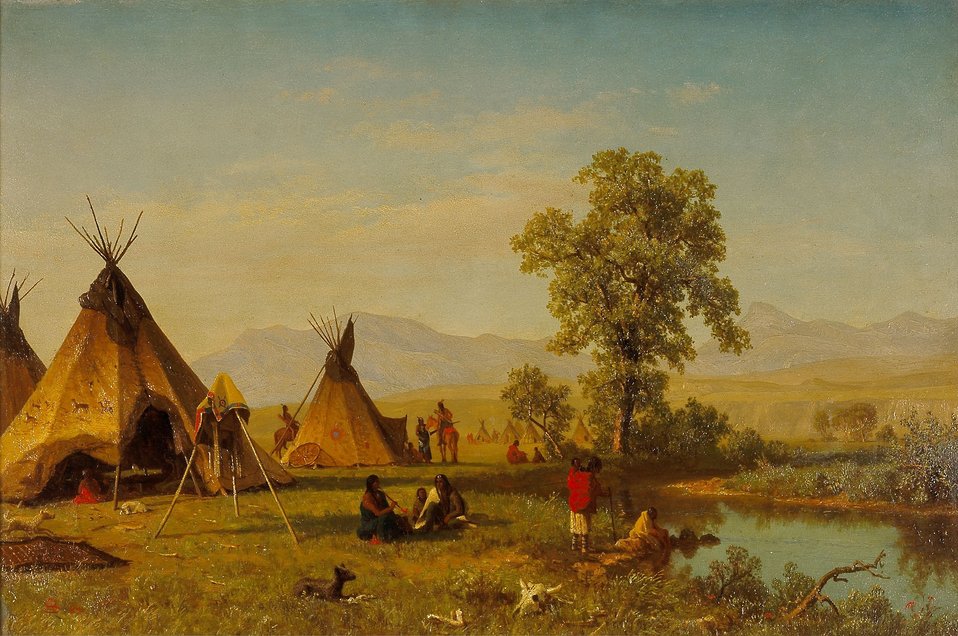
Albert Bierstadt - Sioux Village near Fort Laramie